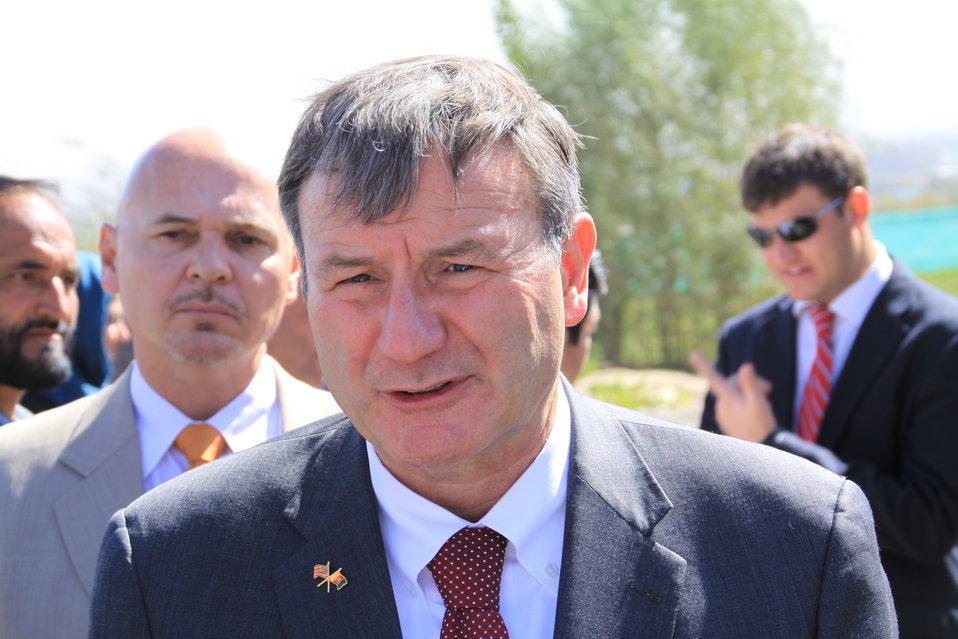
AVIPA Plus Wheat Seed Distribution 101005

US Ambassador Karl Eikenberry and USAID Acting Mission Director Kevin Brownawell joined the Minister of Agriculture, Irrigation and Livestock, H.E. Minister Mohammed Rahimi in signing a Memorandum of Understanding and distributing vouchers to area farmers for wheat and fertilizer.

US Ambassador Karl Eikenberry and USAID Acting Mission Director Kevin Brownawell joined the Minister of Agriculture, Irrigation and Livestock, H.E. Minister Mohammed Rahimi in signing a Memorandum of Understanding and distributing vouchers to area farmers for wheat and fertilizer.

US Ambassador Karl Eikenberry and USAID Acting Mission Director Kevin Brownawell joined the Minister of Agriculture, Irrigation and Livestock, H.E. Minister Mohammed Rahimi in signing a Memorandum of Understanding and distributing vouchers to area farmers for wheat and fertilizer.